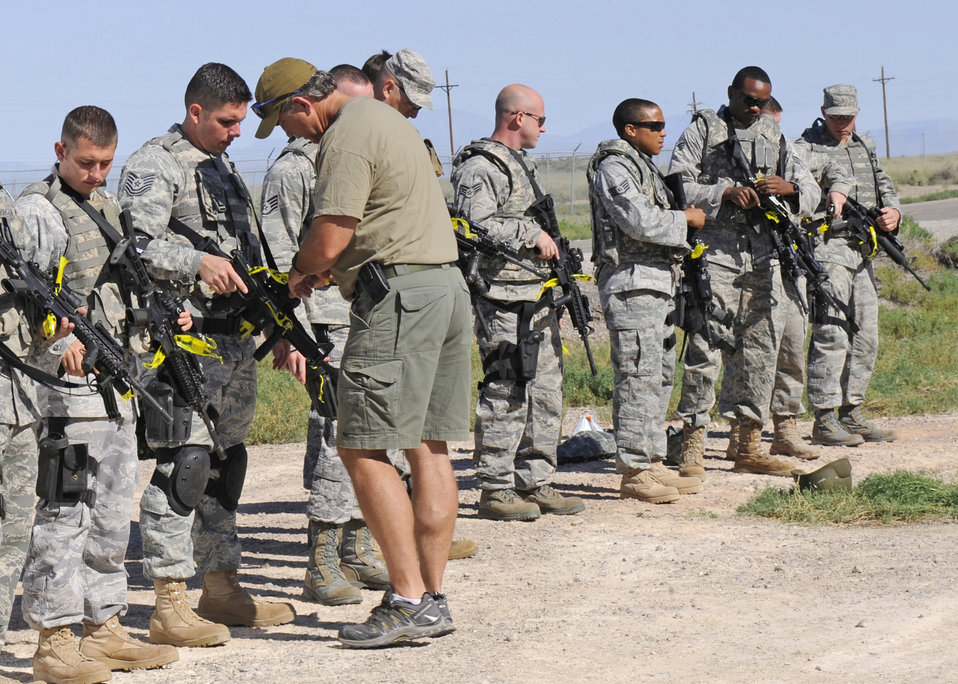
Holloman defenders train with FBI

Special Agent Rich Price ensures weapons are clear of any live rounds during training Aug. 6, 2010, at Holloman Air Force Base, N.M. Members of the 49th Security Forces Squadron trained with members of the FBI, practicing close-quarter battle and basic ballistic shield work. Agent Price is a training coordinator with the Federal Bureau of Investigation, Albuquerque division.